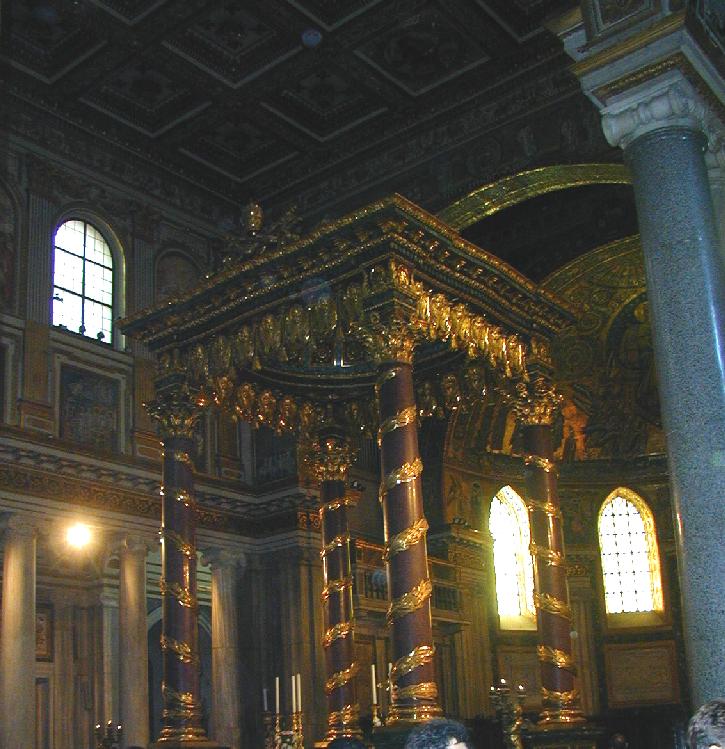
001126 1 smm baldacchino